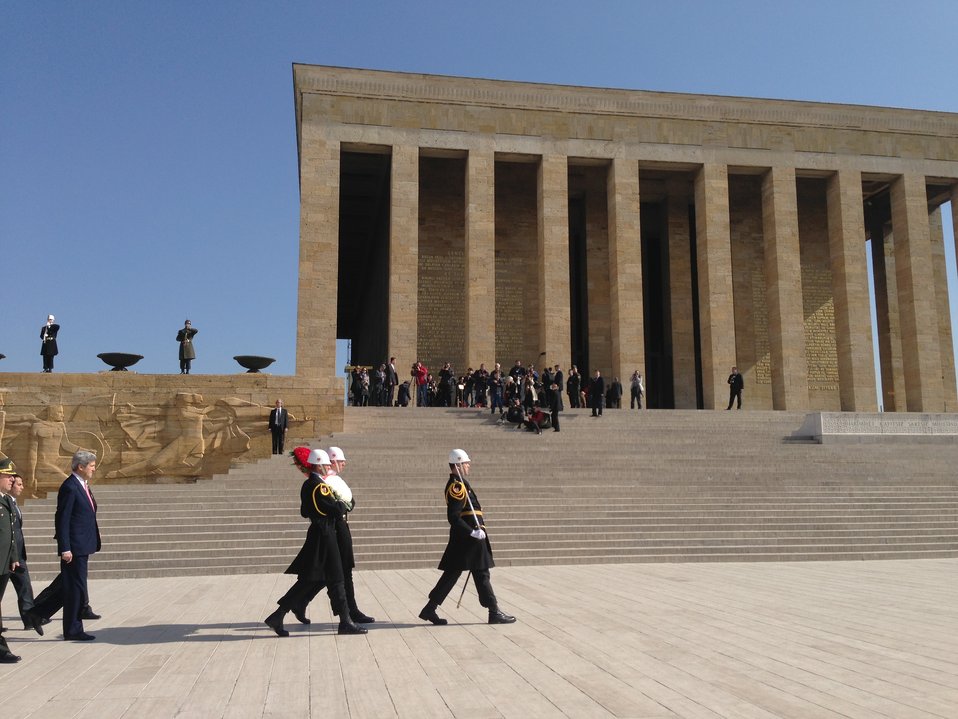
Secretary Kerry Participates in a Wreath-Laying Ceremony at Ataturk's Tomb

U.S. Secretary of State John Kerry participates in a wreath-laying ceremony at Ataturk's Tomb in Ankara, Turkey, on March 2, 2013.